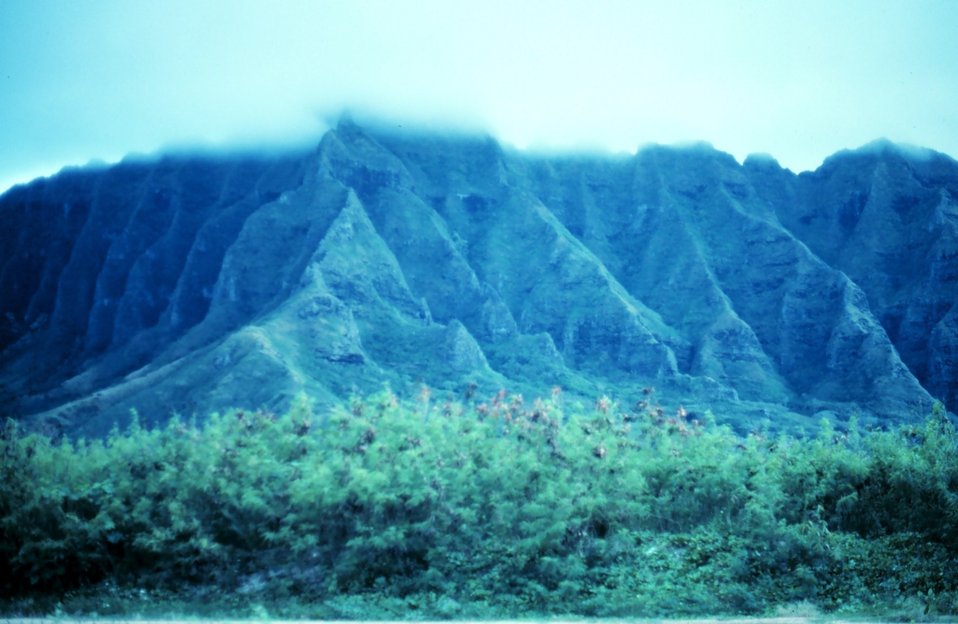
Knife-edged ridge showing effects of erosion with multiple steep stream valleys